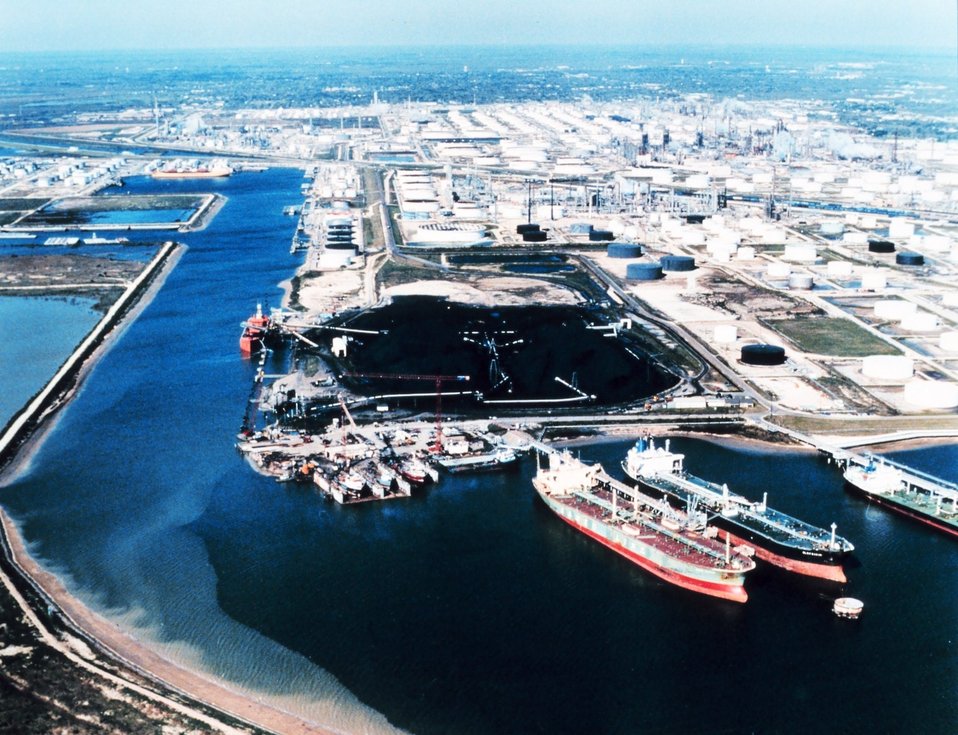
2923 North Latitude 9454 West Longitude.